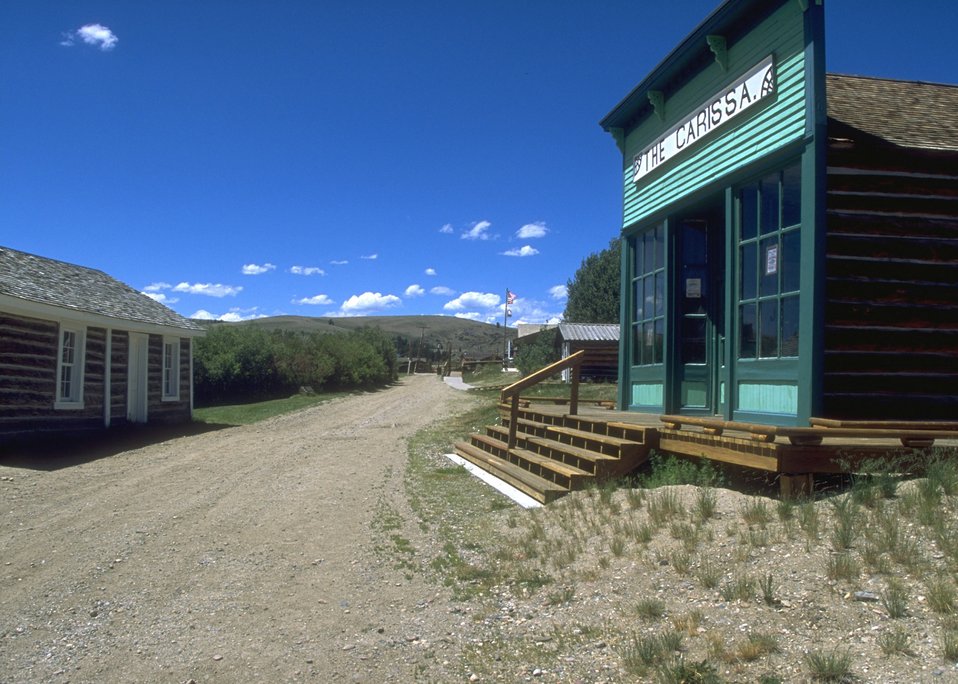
Restored buildings at South Pass City, Lander Field Office.